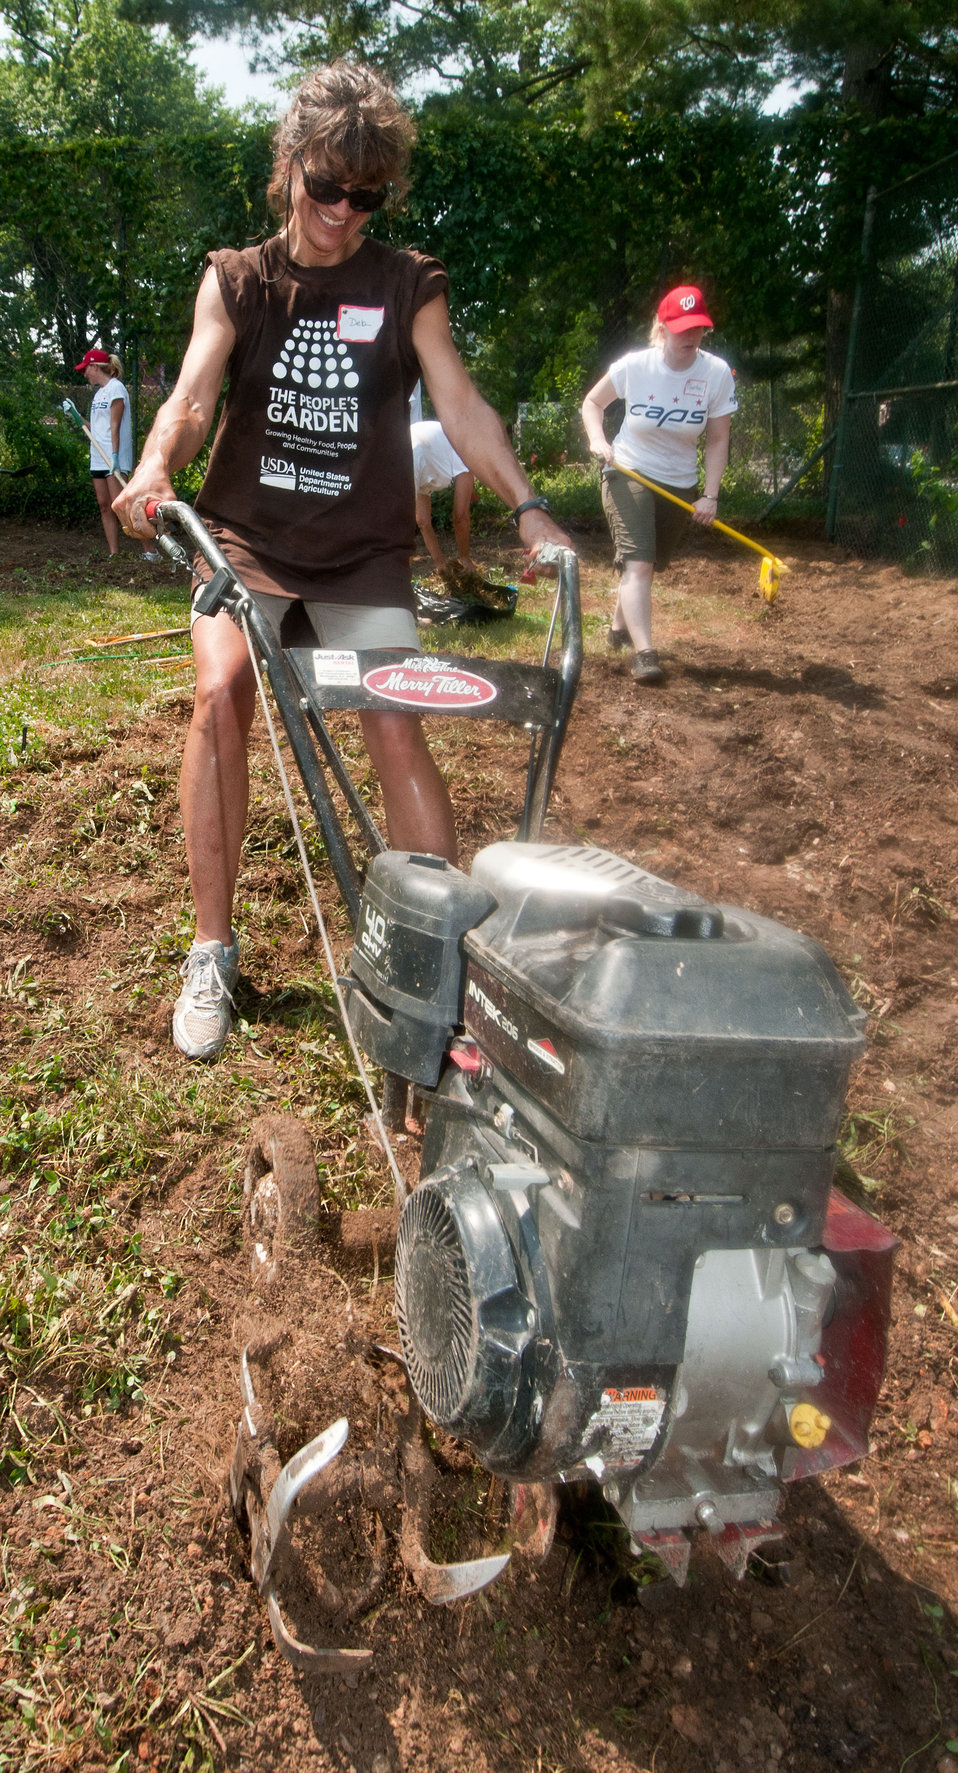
U.S. Department of Agriculture Forest Service National Forest System Ecosystem Management Assistant Director Deborah Beighley takes charge of a power tiller to break up hard pack dirt in the People’s Garden, at William B. Powell Elementary School on Thursday, June 9, 2011 in Washington, DC. Volunteers from U.S. Department of Agriculture People’s Garden Executive Master Gardener program and Washington Capitals hockey organization, along with defenseman Jeff Schultz, and mascot Slapshot transformed a grassy corner of the school playground into a habitat garden and outdoor learning area. Executive Master Gardeners led the volunteer project teams. The Washington Capitals donated new tools; tool shed; garden materials; lunch; most of the volunteers and more. The completed projects included a walking path; tiling of garden plots; planting a bird habitat garden, pollinator garden and native grasses; caterpillar and butterfly plaques; hummingbird and bat house, and tool shed. The garden will later include a picnic area, outdoor classroom, hummingbird garden, Monarch watch garden, native bee garden, and birdbath. USDA challenges its employees to establish People's Gardens at USDA facilities worldwide or on this case, help communities create gardens. People's Gardens vary in size and type, but all have a common purpose - to help the community and the environment.